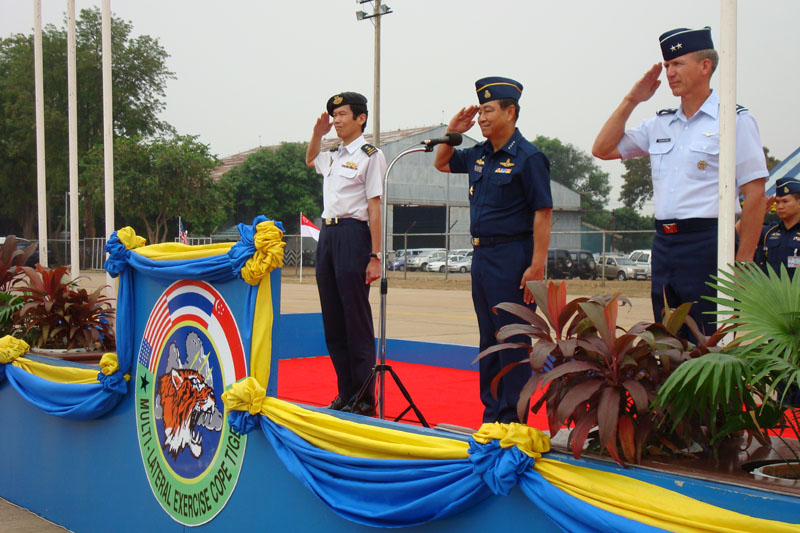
Cope Tiger wraps up in Thailand

Maj. Gen. Jeffrey Remington (right) represents the U.S. military at the official closing ceremony of Exercise Cope Tiger 2008 here Feb. 5 beside the chief of the Air Force, Republic of Singapore Air Force, Maj. Gen. Ng, Chee Khern (far left), and commander-in-chief of the Royal Thai Air Force, Air Chief Marshal Chalit Pukbhasuk. General Remington is the director of air, space and information operations at Headquarters, Pacific Air Forces.